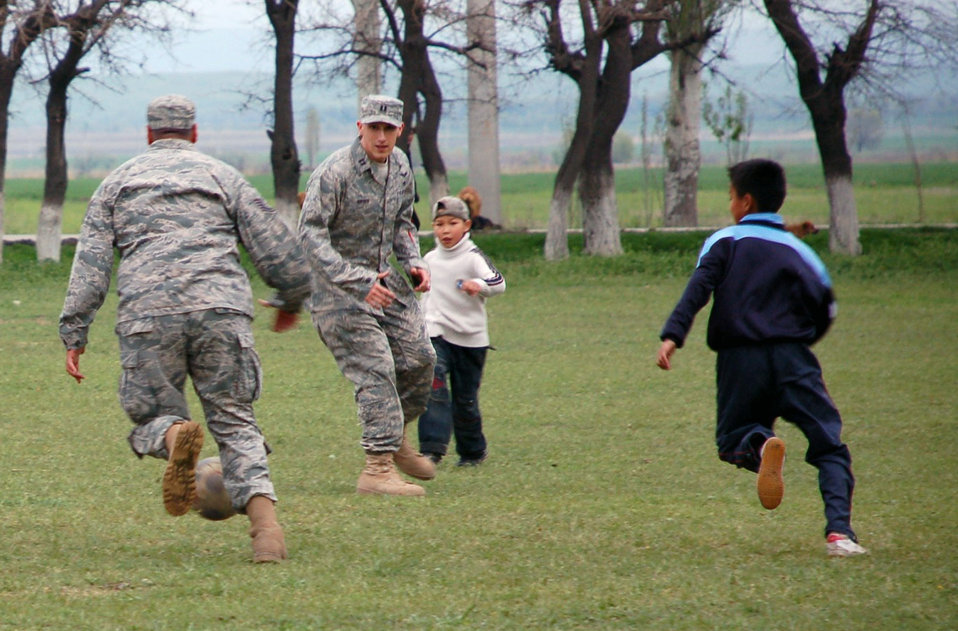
School renovation project builds bond between U.S., Kyrgyz Republic

Following the symbolic ground-breaking ceremony April 14 at Birdik Village School in Kyrgyzstan, students from the school challenge Airmen from nearby Manas Air Base to an impromptu game of soccer. The Airmen were no match for the Kyrgyz children's agility and speed, and ended the game, 2-3.